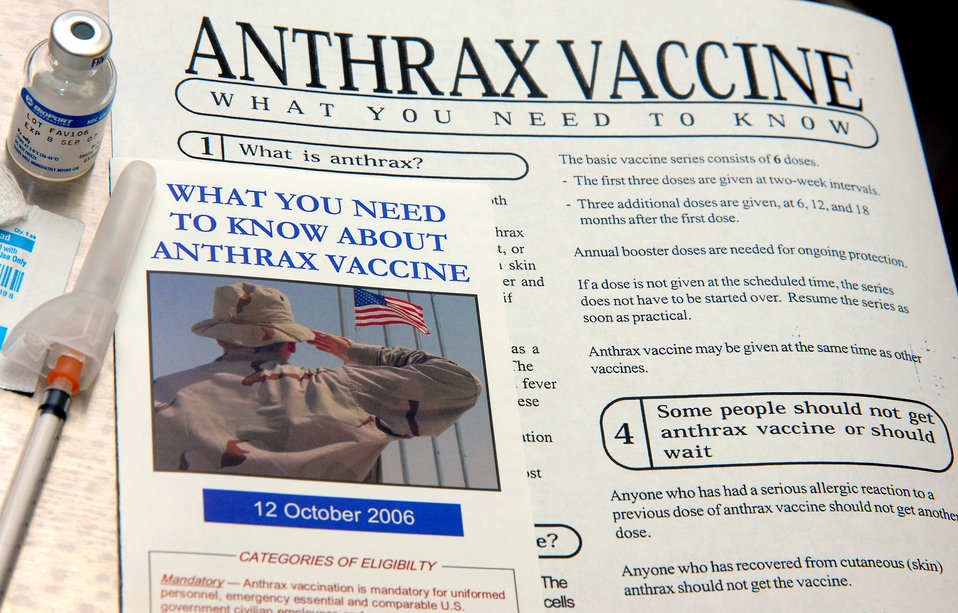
'Shooting' stars

An anthrax vaccine brochure is available for Airmen to review prior to receiving the vaccination. The Anthrax Vaccine Immunization Program mandates Airmen assigned to high-threat areas receive the anthrax vaccine series, while also providing Airmen the choice to continue anthrax vaccines if they are not assigned to a designated high-threat area.